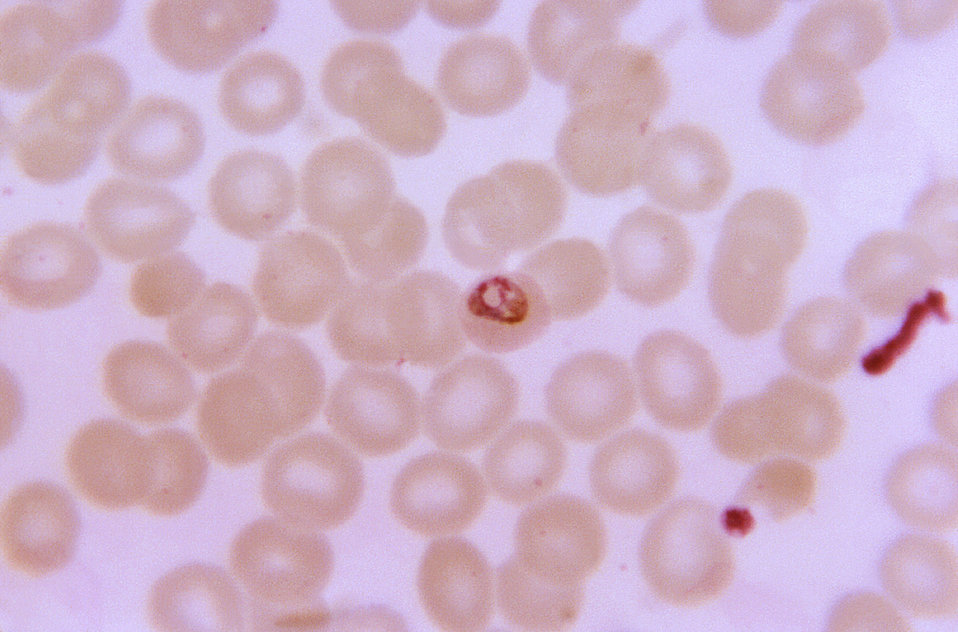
This thin film blood smear micrograph depicts a growing Plasmodium malariae trophozoite.